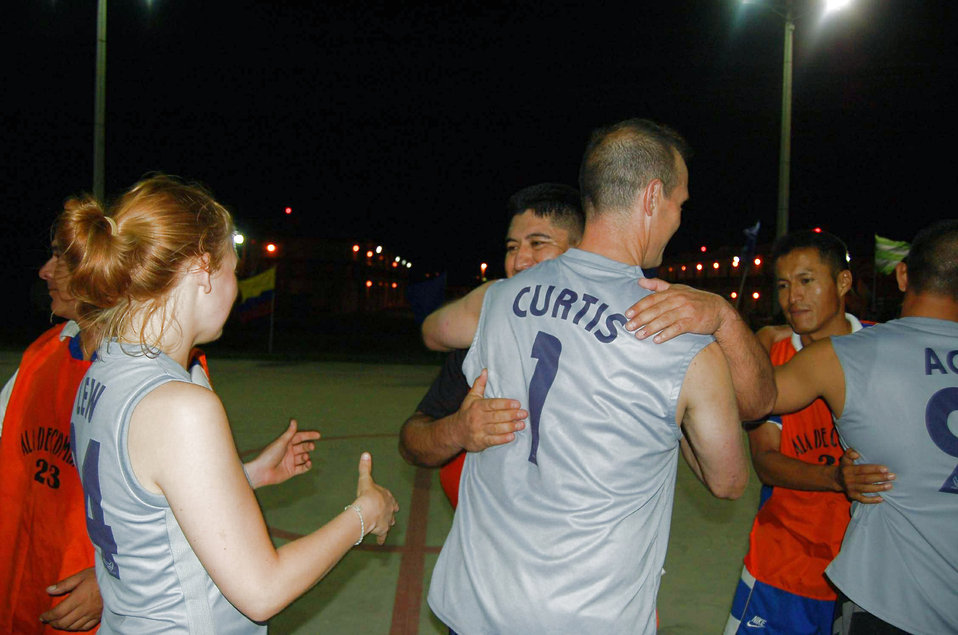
Ecuadorian air force edges U.S. Air Force 26-25

Members of the U.S. Air Force team hug the members of the Ecuadorian air force team after a championship basketball game Dec. 9 at Forward Operating Location Manta in Ecuador. Nearly 100 fans cheered on their favorite team, as the Ecuadorian air force pulled out a 26-25 victory.